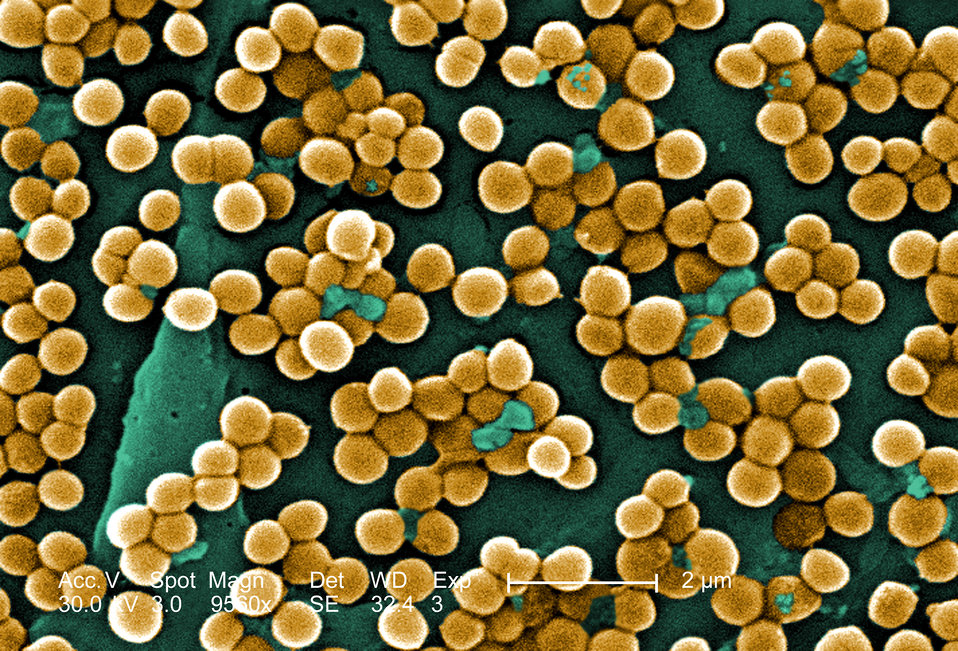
This 2005 scanning electron micrograph (SEM) depicted numerous clumps of methicillin-resistant Staphylococcus aureus bacteria, commonly referred to by the acronym, MRSA; Magnified 9560x.Recently recognized outbreaks, or clusters of MRSA in community settings have been associated with strains that have some unique microbiologic and genetic properties, compared with the traditional hospital-based MRSA strains, which suggests some biologic properties, e.g., virulence factors like toxins, may allow the community strains to spread more easily, or cause more skin disease. A common strain named USA300-0114 has caused many such outbreaks in the United States. See PHIL 7821 for a black and white version of this micrograph.